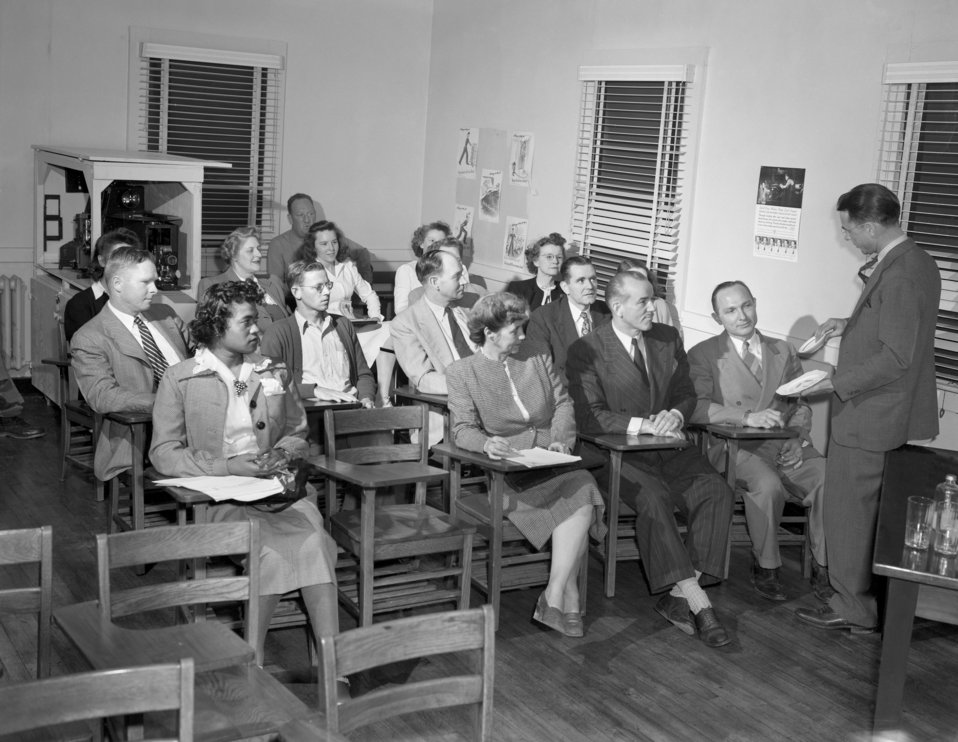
Health Department Meeting Oak Ridge 1947

3440-2 DOE photo Ed Westcott 5-1947 Oak Ridge Tennessee